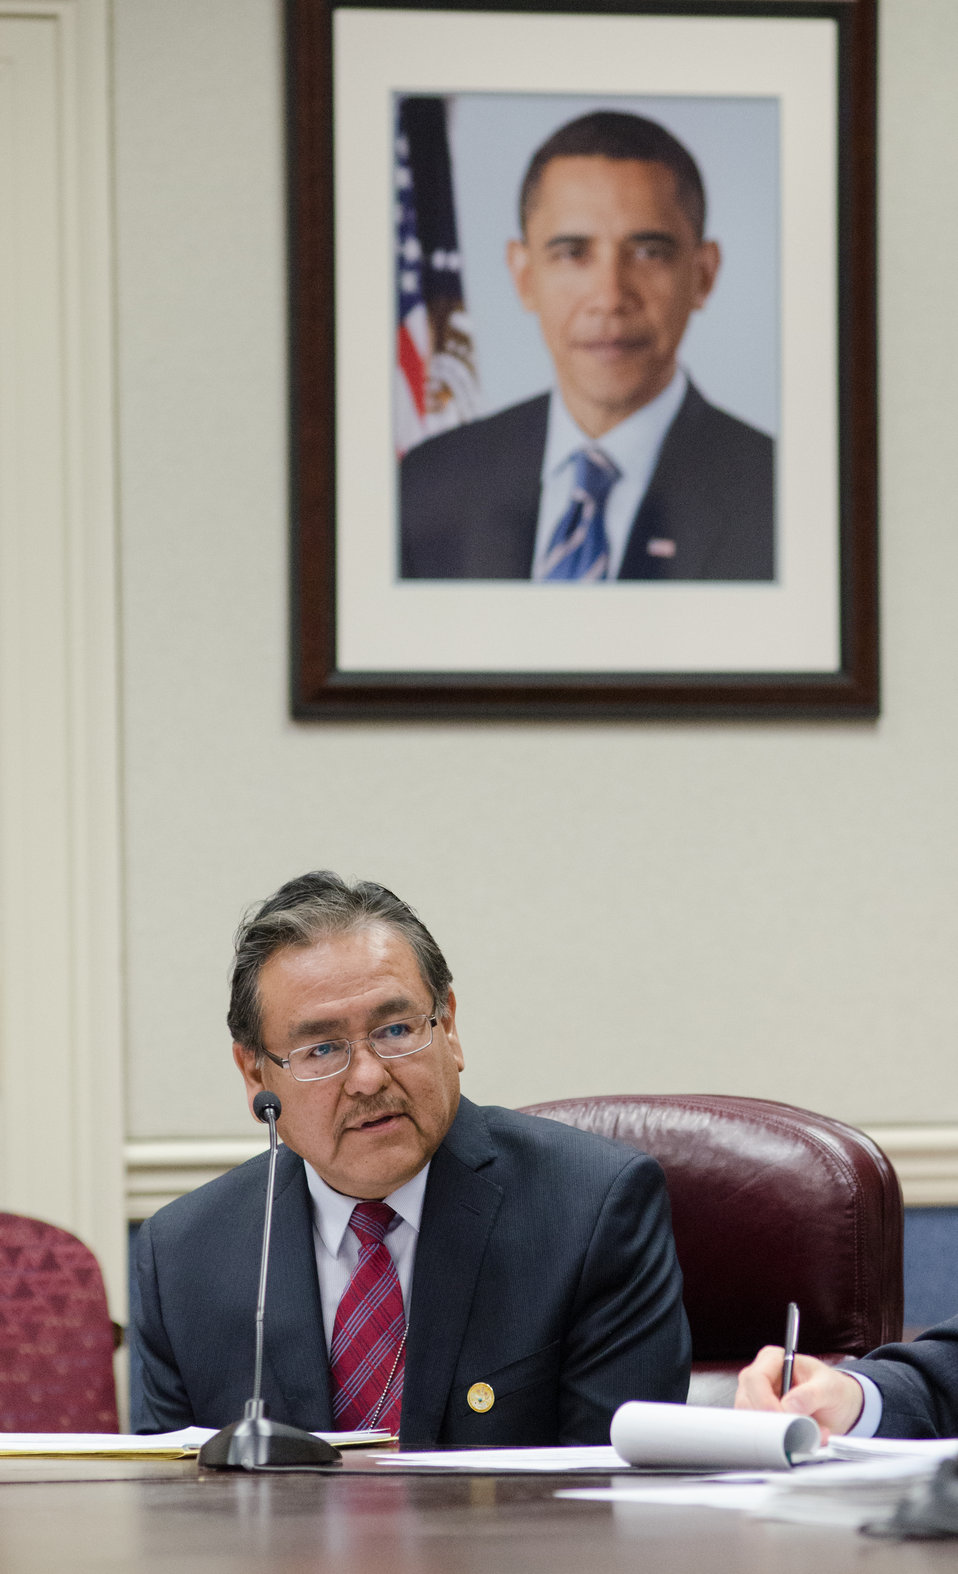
Navajo Technical College President Elmer Guy's, makes opening remarks during the USDA and American Indian Higher Education Consortium Leadership Group Winter Meeting, at the USDA Whitten Building, Williamsburg Room, in Washington D.C., on Friday, Feb. 8, 2013.